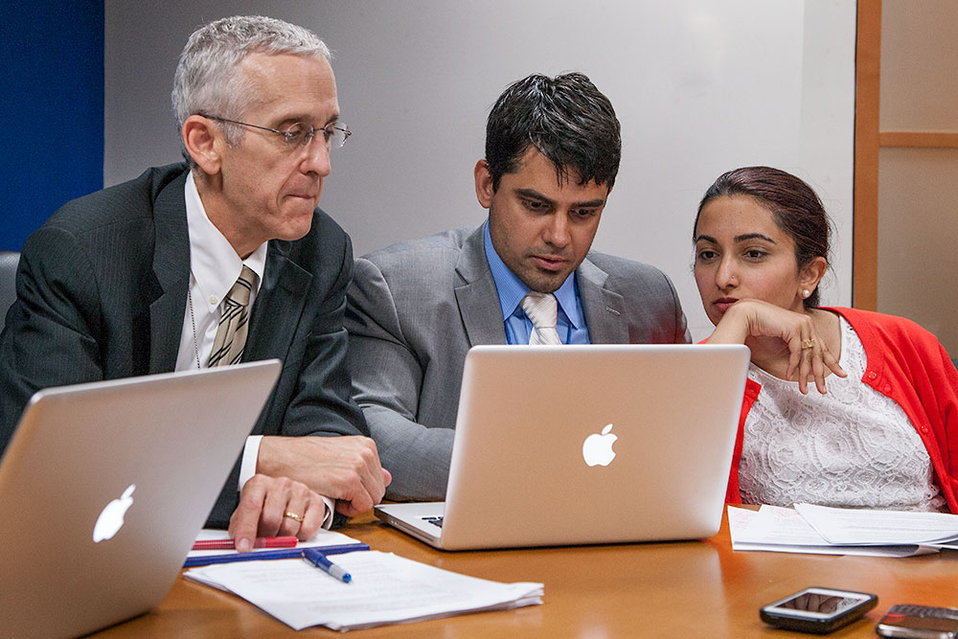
Special Envoy Stern Participates in a Facebook Chat

Special Envoy for Climate Change Todd Stern participates in a Facebook chat on climate change on June 28, 2013.